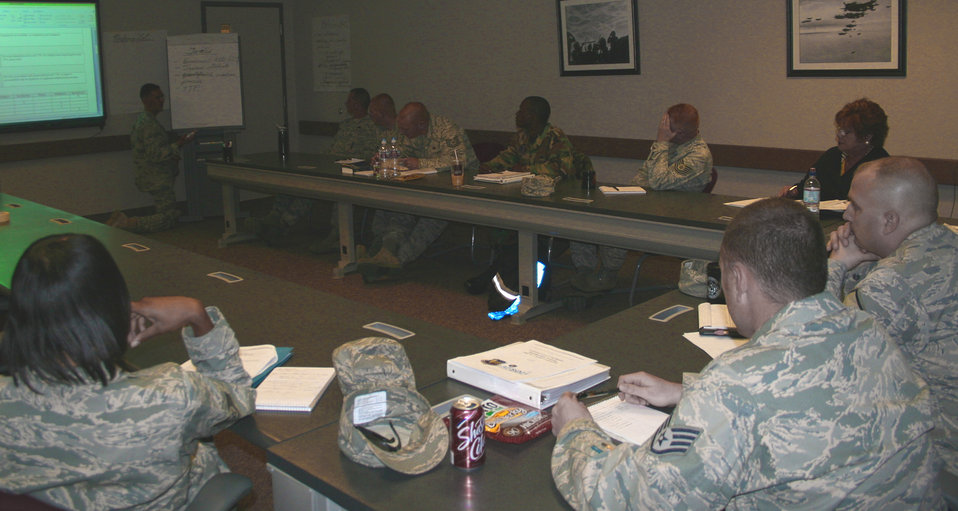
Squadron Airmen improve following improvement event

Airmen from the 9th Munitions Squadron establish goals as part of a step in the process during their Rapid Improvement event at Beale Air Force Base, Calif. The event was held March 30 through April 3 as part of the Air Force Smart Operations of the 21st Century to help maximize value and minimize waste.